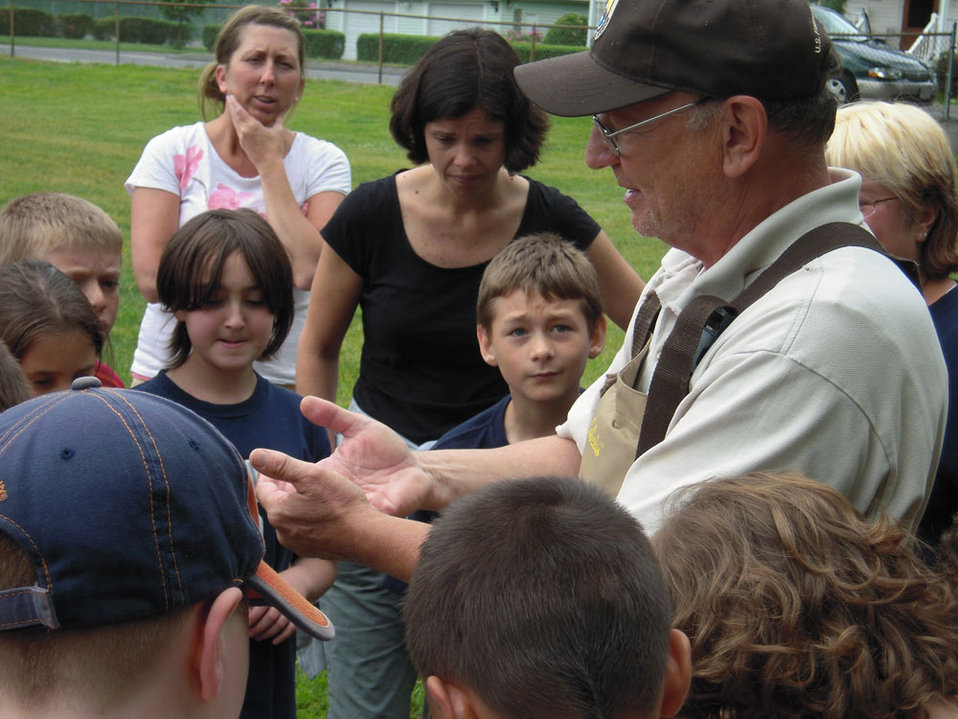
Micky Novak, a veteran of the Vietnam War and Hatchery Manager at Richard Cronin National Salmon Station in Sunderland, Massachusetts, holds catch-and-release fishing events for veterans. Since 1992 about 4,000 veterans have attended the events hosted by Novak and several dedicated volunteers. “It’s vets helping vets,” said Novak.